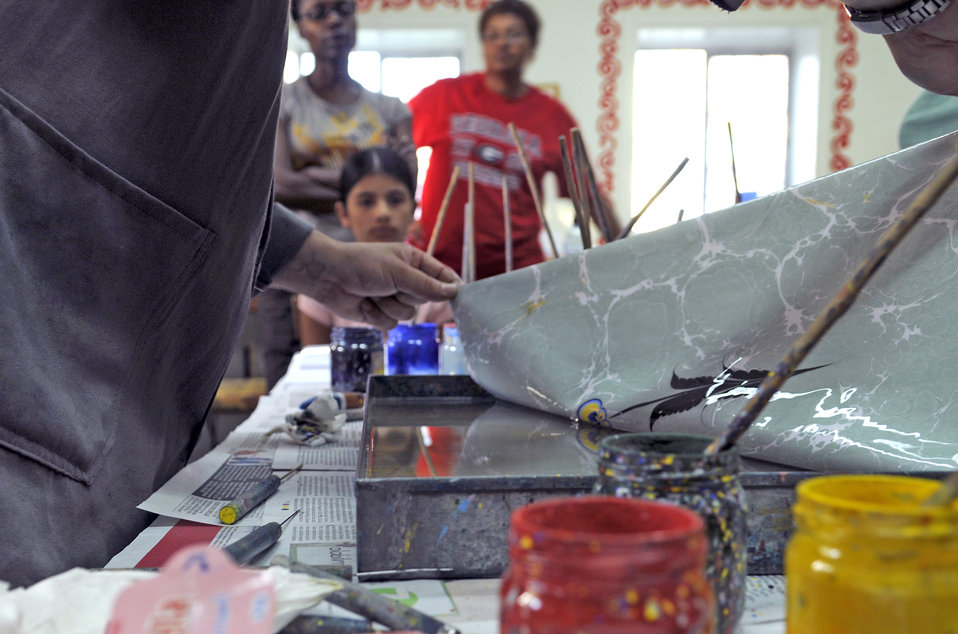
Learning Turkish art

Mesut Dikel, an Ebru art instructor, peels back paper from a tray to expose a flora design during a class June 24 at the Arts and Crafts Center at Incirlik Air Base, Turkey. Mr. Dikel has been creating Ebru art, a unique Turkish art form, for nearly 24 years. Ebru, or paper marbling, uses all-natural products from the brushes to the paints.